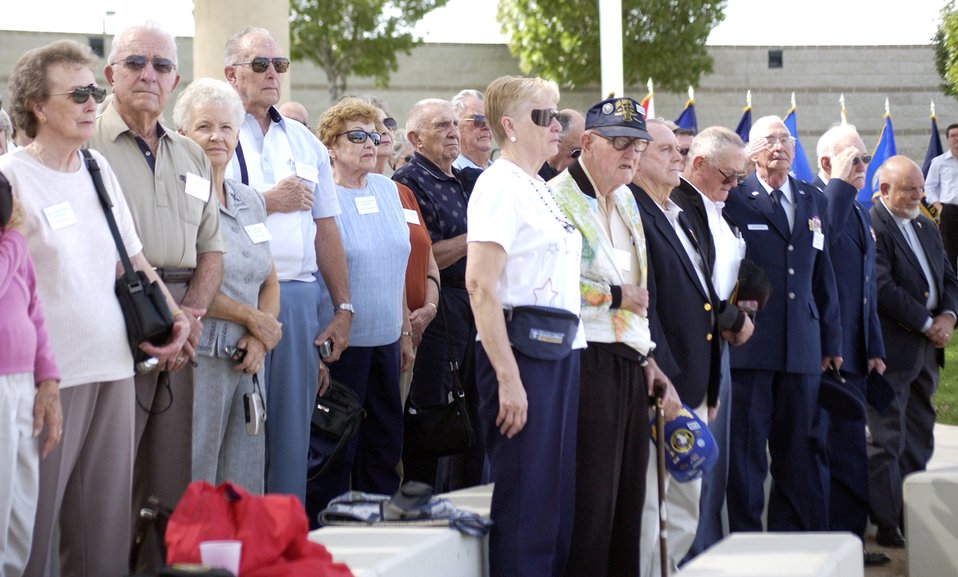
Seeds of 56-year marriage planted during Berlin Airlift

Some of the 150 attendees at the Berlin Airlift plaque dedication stand for the national anthem during Berlin Airlift plaque dedication at Veterans Memorial Park Oct. 4.